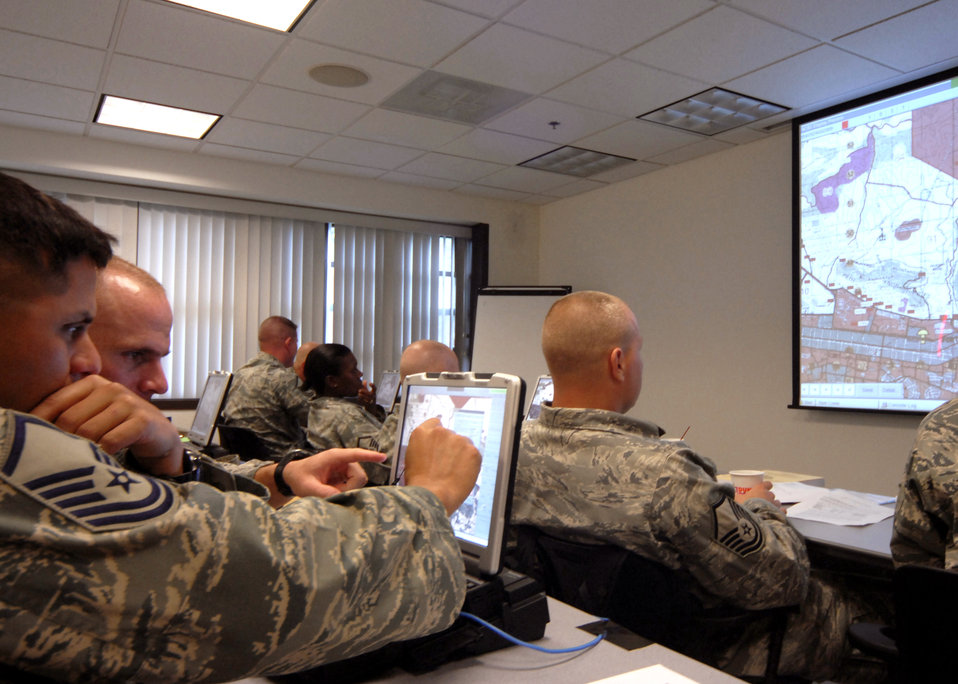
Joint training initiative at Expeditionary Center prepares security forces Airmen for battlefield

Security forces Airmen train on the Army's Blue Force Tracker system during their pre-deployment training at the Air Force Expeditionary Center's 421st Combat Training Squadron Aug. 29, 2009, at Joint Base McGuire-Dix-Lakehurst, N.J. The Blue Force Tracker is a system that gives air and ground units and their commanders a real-time picture of the battlefield.